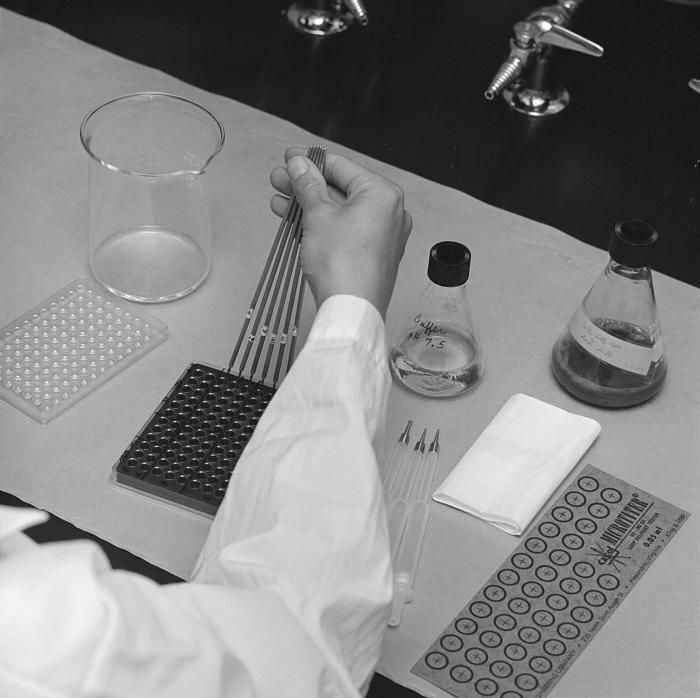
This historic 1965 photograph depicted a laboratory technician, as he was employing a microtechnique during an analysis, which would test for the suspected presence of anti-streptolysin O (ASO or ASLO), in a patient's serum samples. ASO is an antibody produced by a person infected with Lancefield group A streptococci bacteria, in response to the bacterias' production of an enzymne, i.e., antigen, streptolysin O. This enzyme is one of two produced by this pathogen, which is involved in the hemolytic reaction seen in specific streptococcal infections. Hemolysis is the physical breakdown of red blood cells (RBCs)